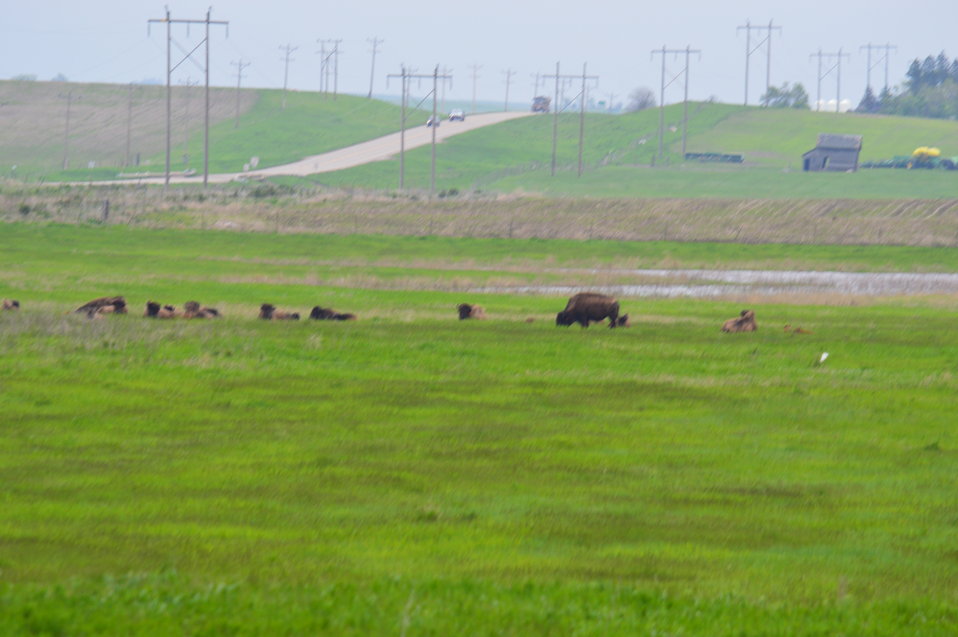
Bison

Scenery and wildlife at Lake Ilo National Wildlife Refuge in North Dakota